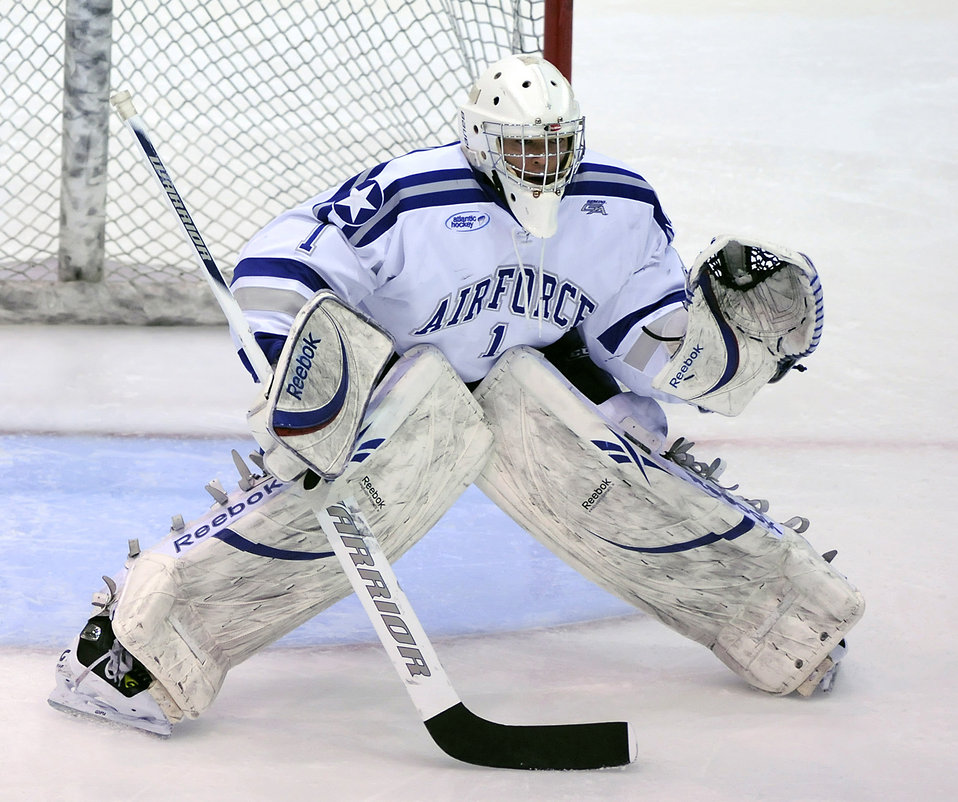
No goals here

In his last regular-season game, Falcon senior goalie Andrew Volkening guards the goal as the Falcons beat the Sacred Heart Pioneers 8-1 at the U.S. Air Force Academy's Cadet Ice Arena Feb. 27, 2010. The victory clinched third place in the Atlantic Hockey Association.